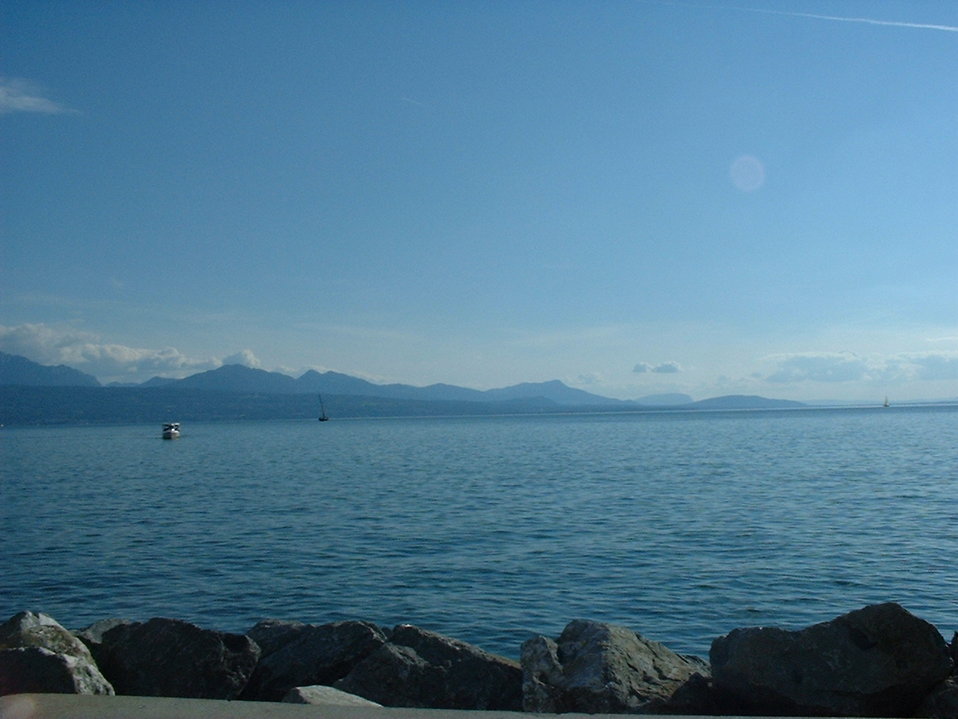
View of Lake Geneva from Lausanne, Switzerland